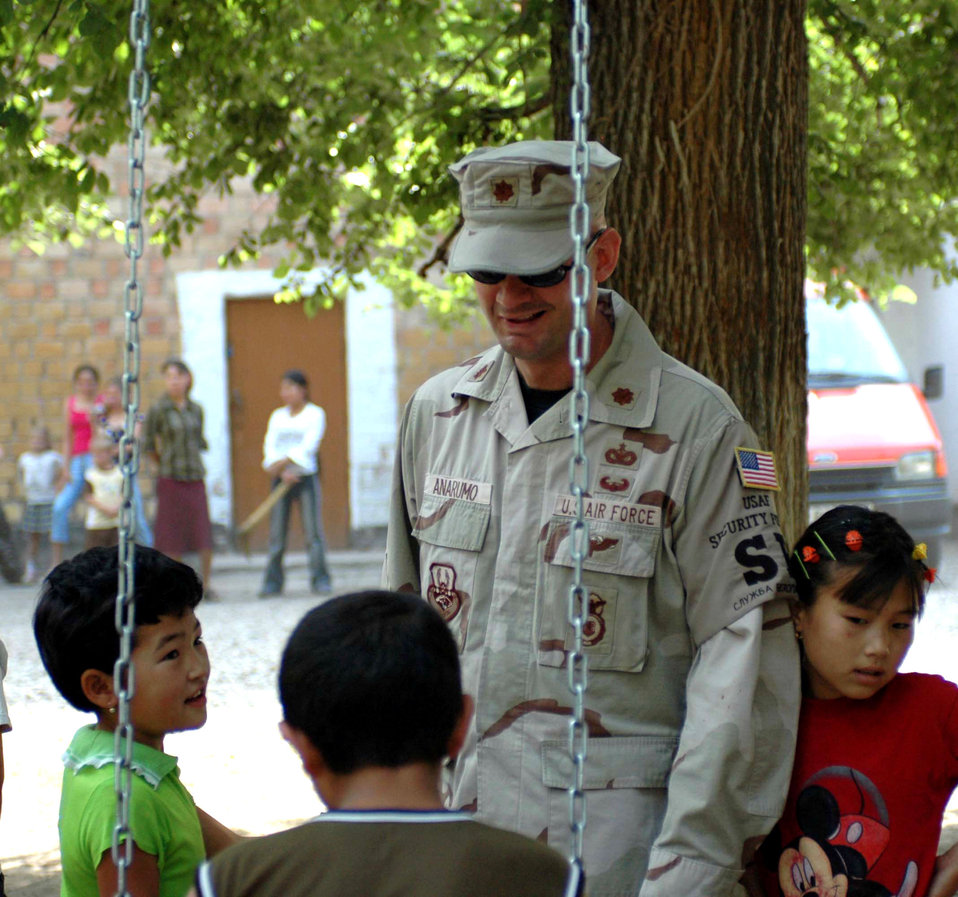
376th ESFS dedicates new children's playground

Maj. Mark Anarumo, 376th Expeditionary Security Forces Squadron, speaks to Oktobersky Village, Kyrgyzstan children during the dedication of a new children's playground at their school. Major Anarumo and members from the 376th Air Expeditionary Wing at Manas Air Base, Kyrgyzstan, were on hand to dedicate the playground, built by members of the 376th ESF and Civil Engineer squadrons. Major Anarumo is deployed from the 43rd Security Forces Squadron, Pope Air Force Base, N.C.